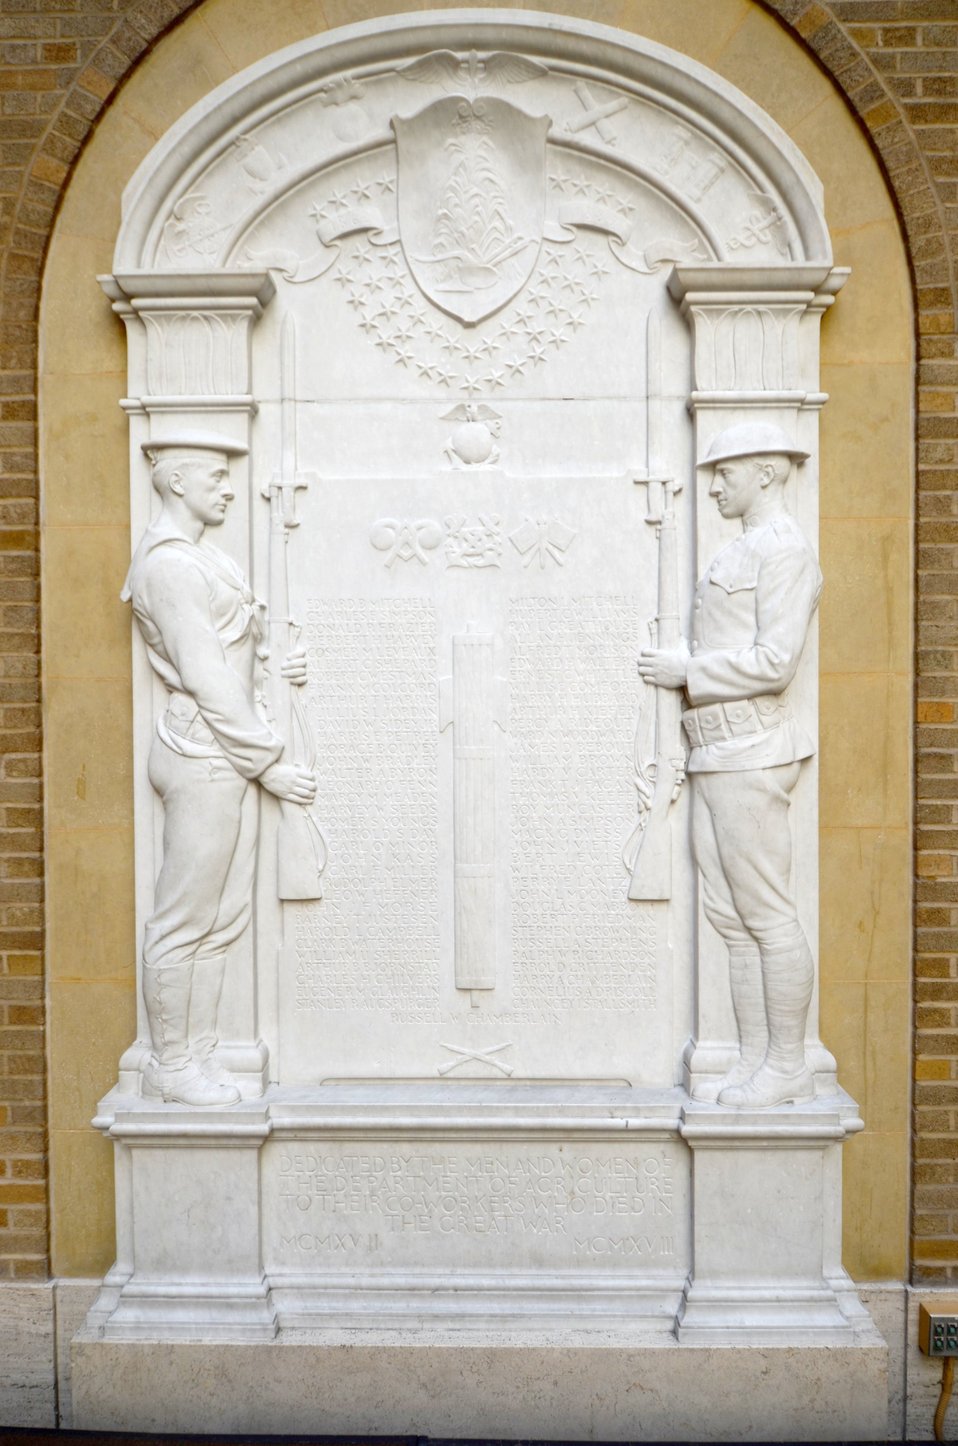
A WW I, memorial dedicated by the men and women of the Department of Agriculture to their co-workers who died in the Great War 1917-1918. At the U.S.Department of Agriculture's covered patio in the Whitten Building, in Washington, DC, on Monday Aug 1, 2011. There are the names of the 69 individuals.